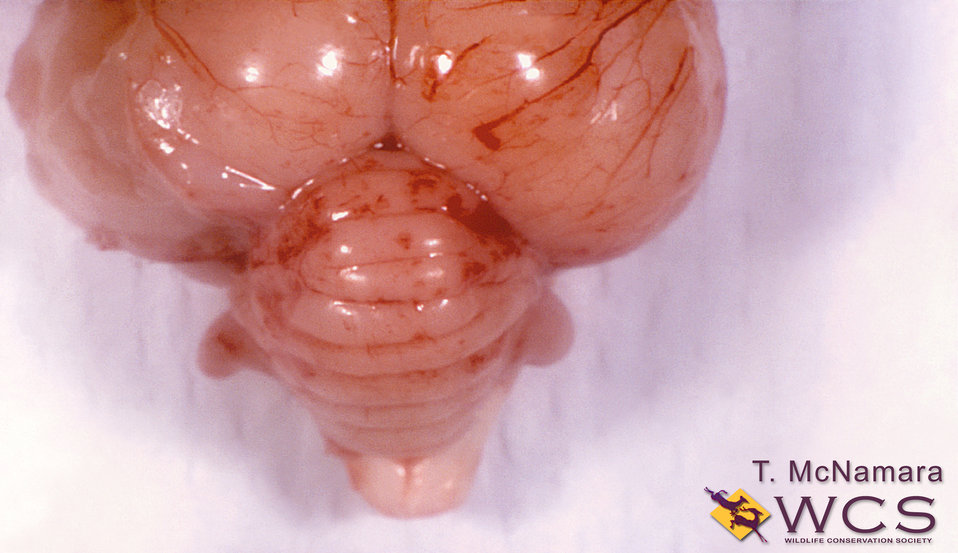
Performed by Tracey McNamara, DVM, Dipl. ACVP, formerly a veterinary pathologist at the Wildlife Conservation Society (located at the Bronx Zoo), a 1999 autopsy of a flamingo, revealed symptoms including the encephalitis seen here, which lead to a diagnosis of West Nile virus.